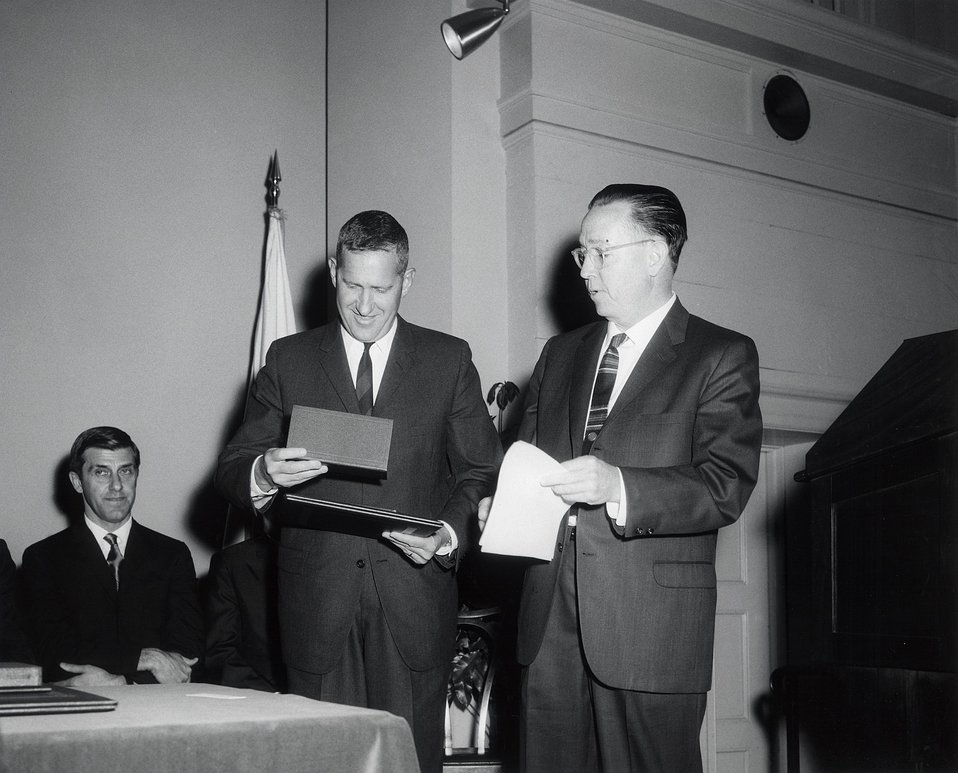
7th E.O. Lawrence Award Ceremony, April 27, 1966, Wash., D.C. L-R: Dr. Huizenga, Dr. Agnew, Commissioner Ramey.